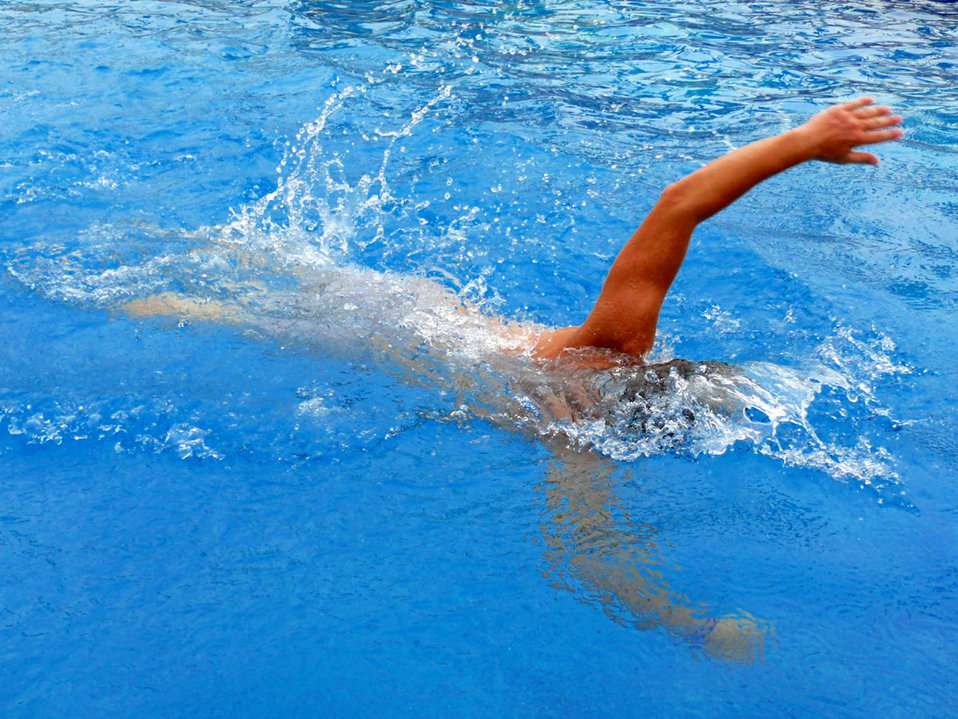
Swimming man.